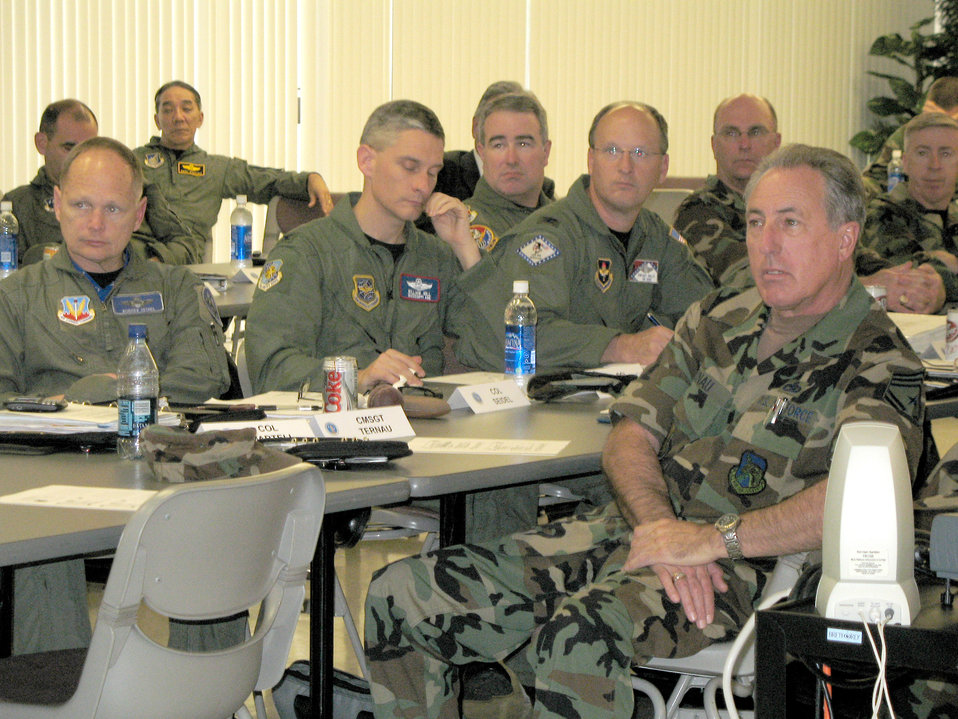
ANG leaders commend Hickam's total force integration

Air National Guardsmen with the Air Directorate Field Advisory Council and the Enlisted Field Advisory Council held their quarterly council meetings at Hickam Air Force Base, Hawaii, Jan. 17. The Hawaii Air National Guard served as host for the conference. The council members discussed issues involving the ANG as a whole and the successful total force integration of the 15th Airlift Wing and Hawaii Air National Guard's 154th Wing C-17 Globemaster III operations and how that integration can be implemented at other locations.